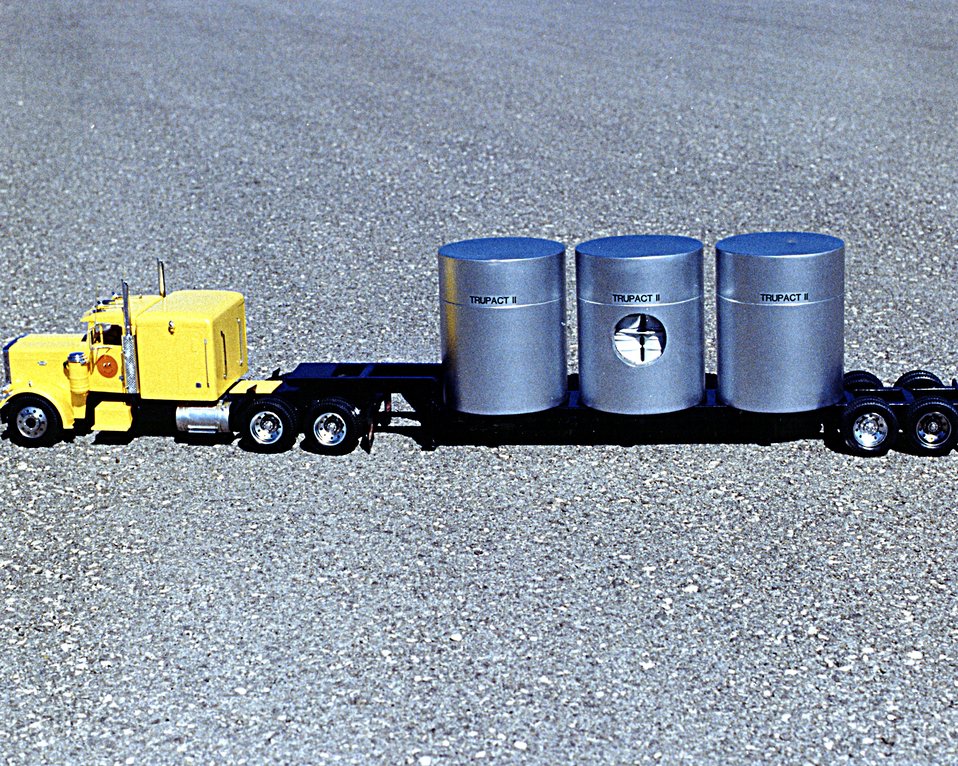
TRUPACT-II MODEL DESIGNED TO HOLD SEVEN CANISTERS OF WASTE.

THE WASTE ISOLATION PILOT PLANT IS A DOE RESEARCH AND DEVELOPMENT FACILITY FOR DEMONSTRATING THE SAFE DISPOSAL OF TRANSURANIC RADIOACTIVE WASTES. TEST SHAFTS HAVE BEEN DRILLED TO A DEPTH OF 2,100 FEET. THE SHAFTS, ONE 6 FEET IN DIAMETER AND THE OTHER 12 FEET IN DIAMETER, PROVIDE AN ENTRY PASSAGE AND VENTILATION TO THE UNDERGROUND SALT ROCK FORMATION THAT IS BEING TESTED TO DETERMINE ITS SUITABILITY FOR RADIOACTIVE WASTE STORAGE.